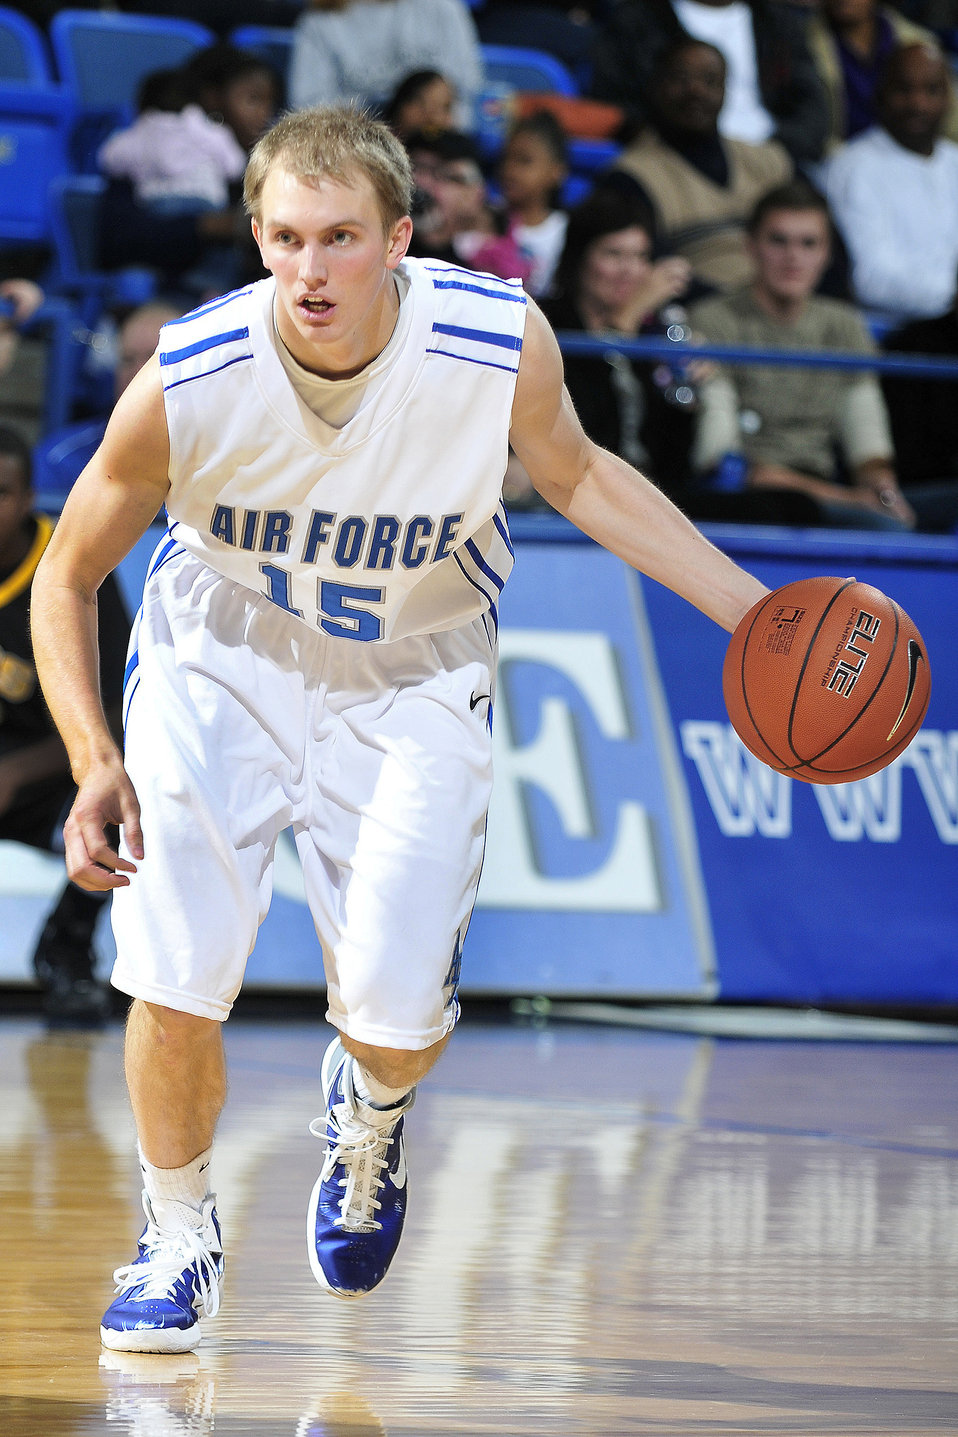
Falcons vs UCCS

Air Force junior point guard Taylor Stewart pushes the ball up court against the University of Colorado at Colorado Springs during the Falcons home opener Nov.14, 2010, at the U.S. Air Force Academy's Clune Arena in Colorado Springs, Colo. The Falcons defeated UCCS 66-53.